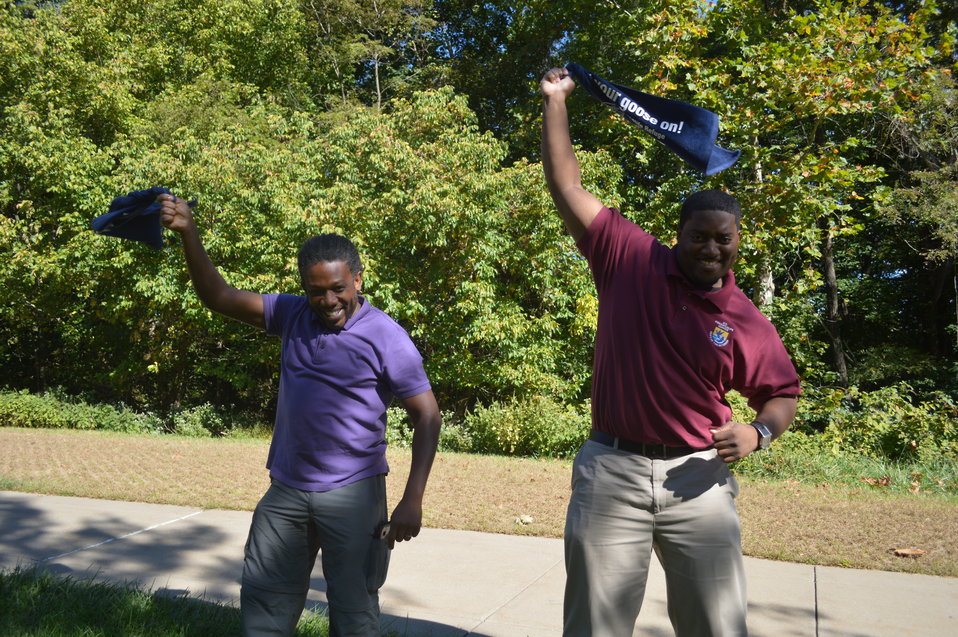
Get Your Goose On!

Photo taken at the National Conservation Training Center in Shepherdstown, WV.

Credit: Ryan Moehring / USFWS

#GetYourGooseOn